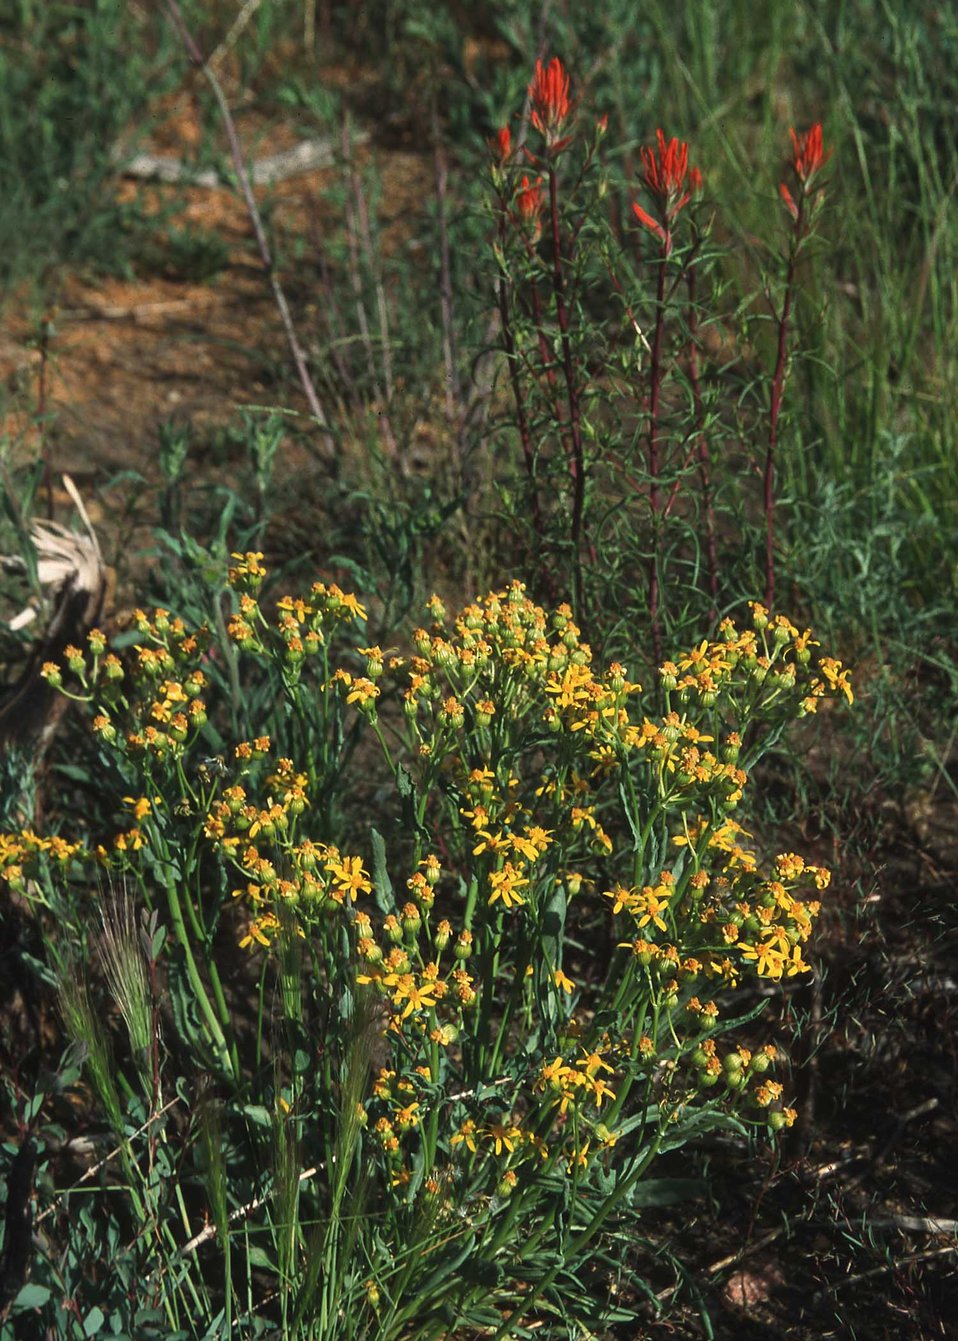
Paintbrush and Composite spp. Wildflowers RMNP.